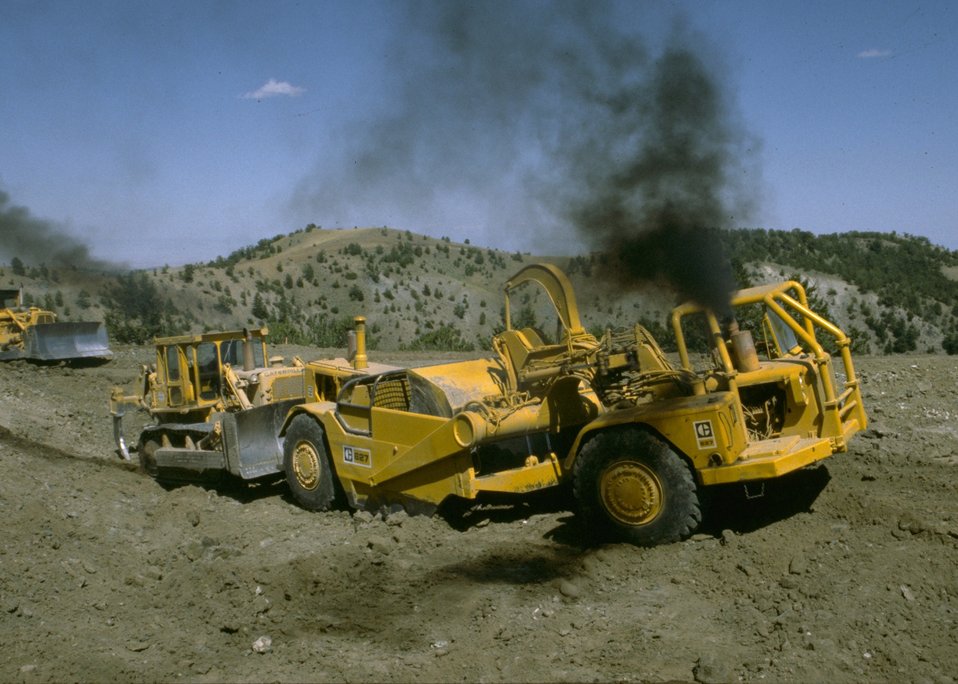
Bulldozing an area for construction.